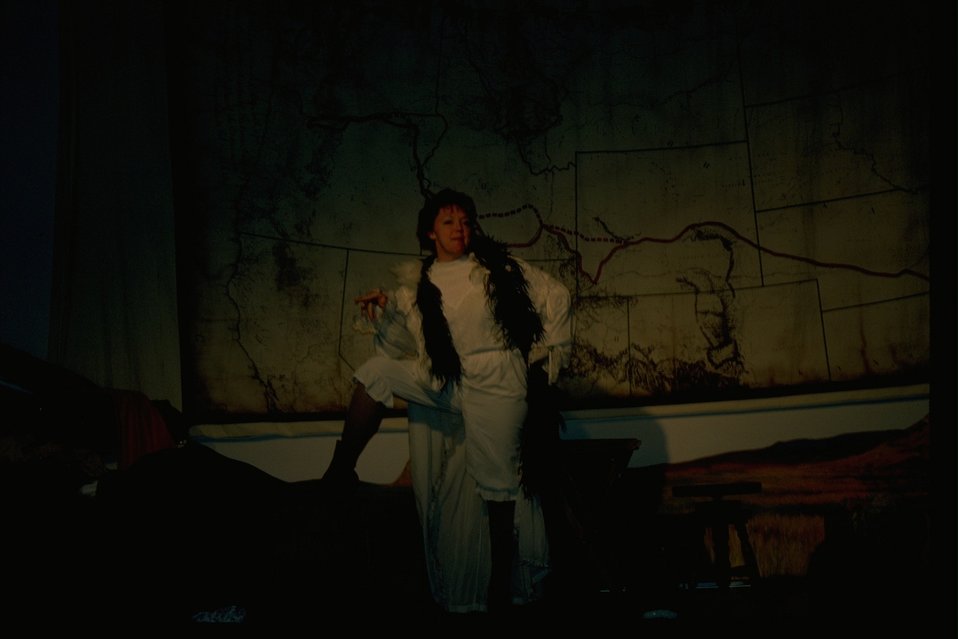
Theater Performance --Jane Van Boskirk-- at the NHOTIC.